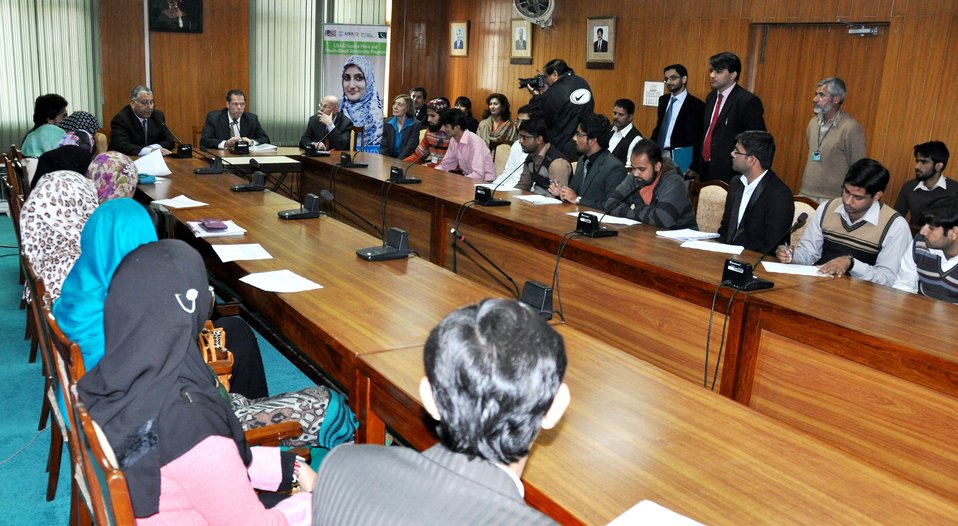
Mr. Larry Sampler, USAID’s Assistant Administrator, Office of Afghanistan and Pakistan Affairs met the students who are getting USAID scholarships and had an interactive discussion.